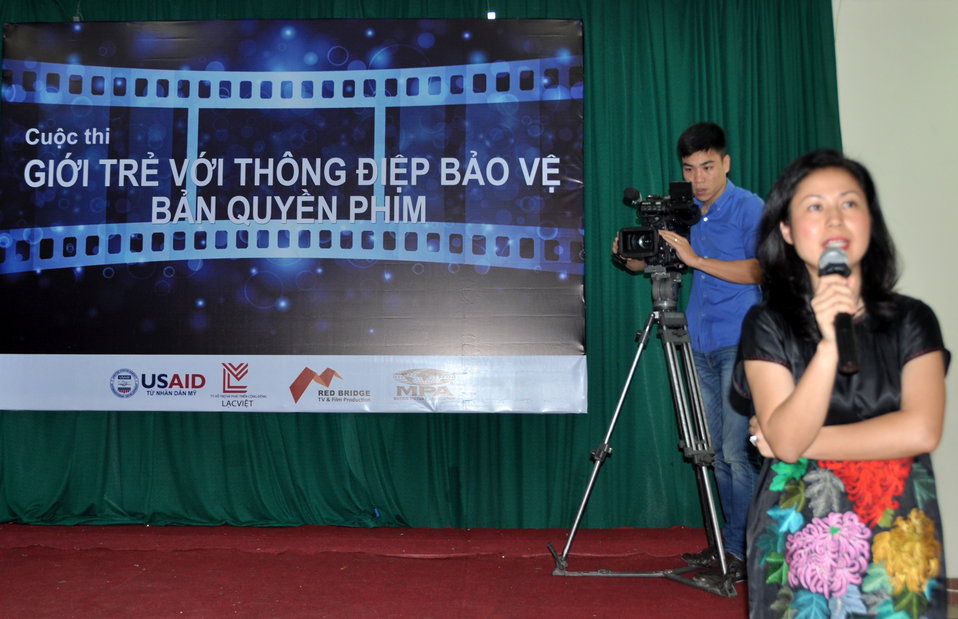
USAID supports scriptwriting contest for students in Hanoi to boost intellectual property rights awareness